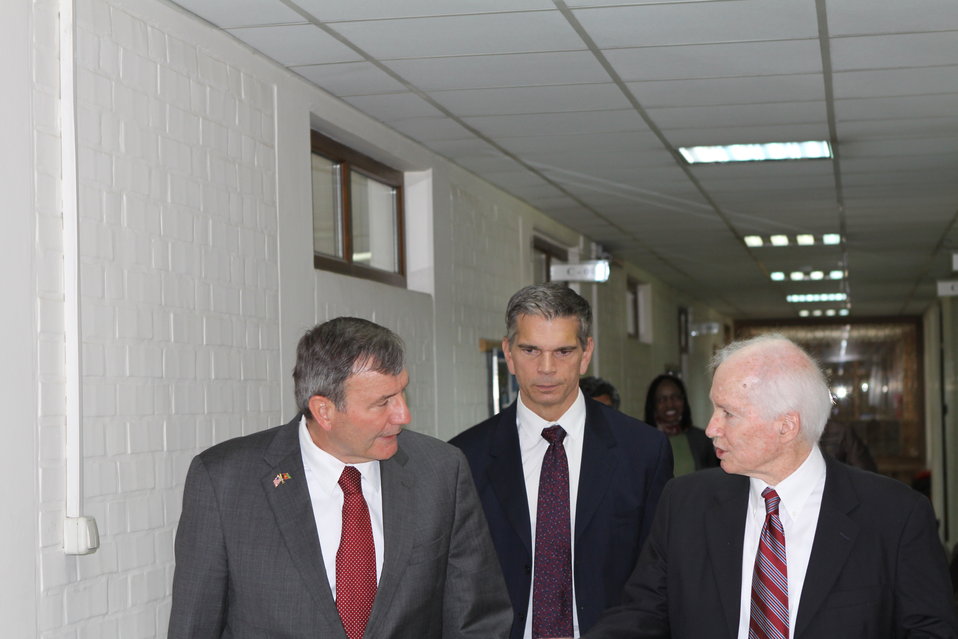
100526 AUAF Graduation 026